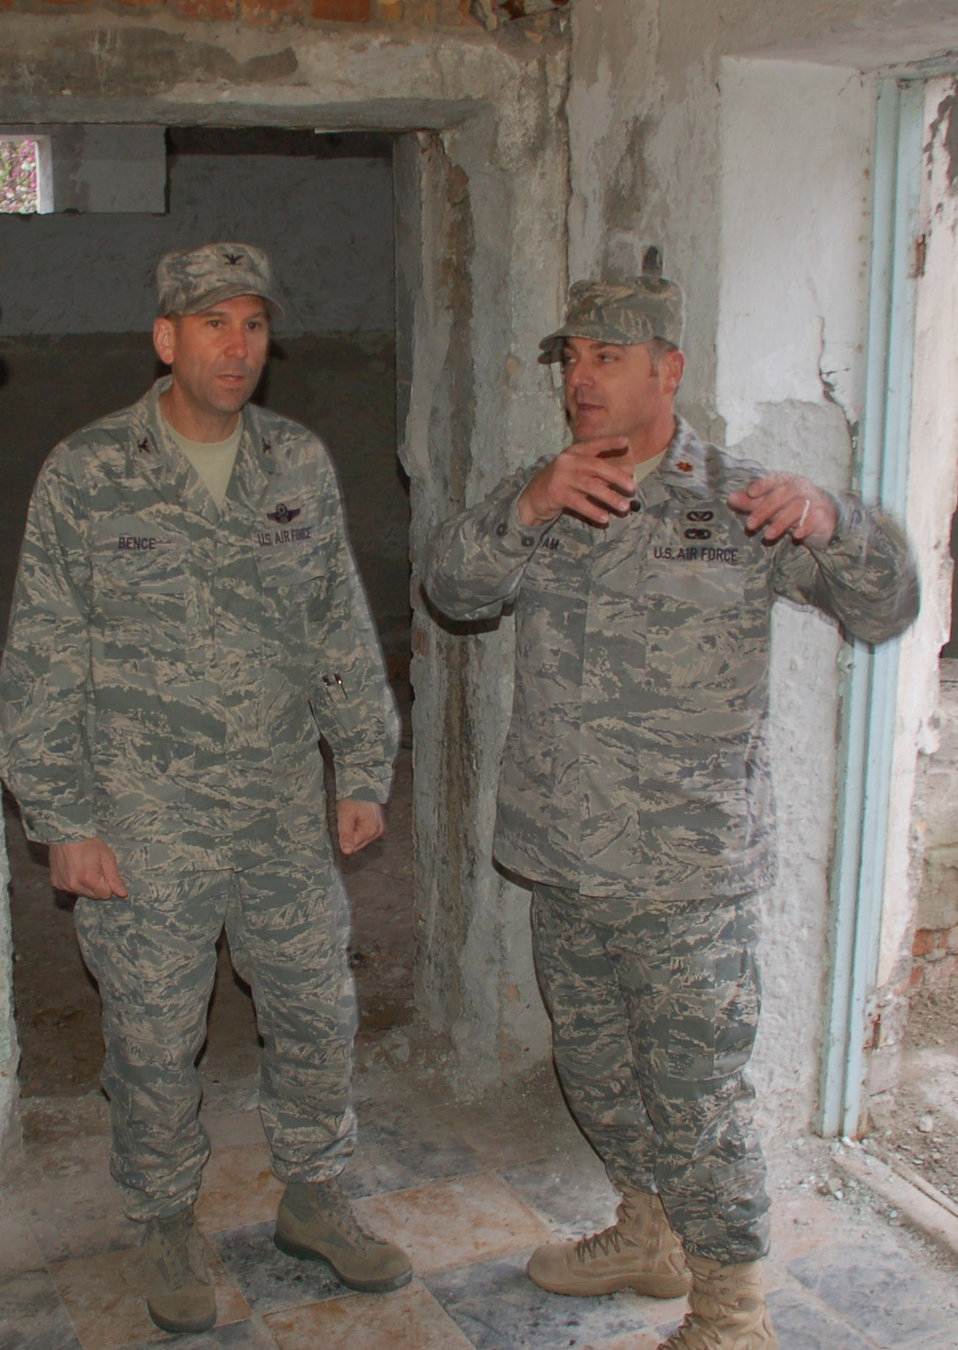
School renovation project builds bond between U.S., Kyrgyz Republic

Maj. Johnnie Adam shows Col. Christopher Bence, 376th Air Expeditionary Wing commander, the progress at Birdik Village School after a ceremony April 14 at the Kyrgyz Republic school, Major Adam is overseeing a $470,000 project to renovate the 200-student school during his deployment to nearby Manas Air Base. The renovation project is in a partnership with U.S. Central Command, the State Department and Manas Air Base.